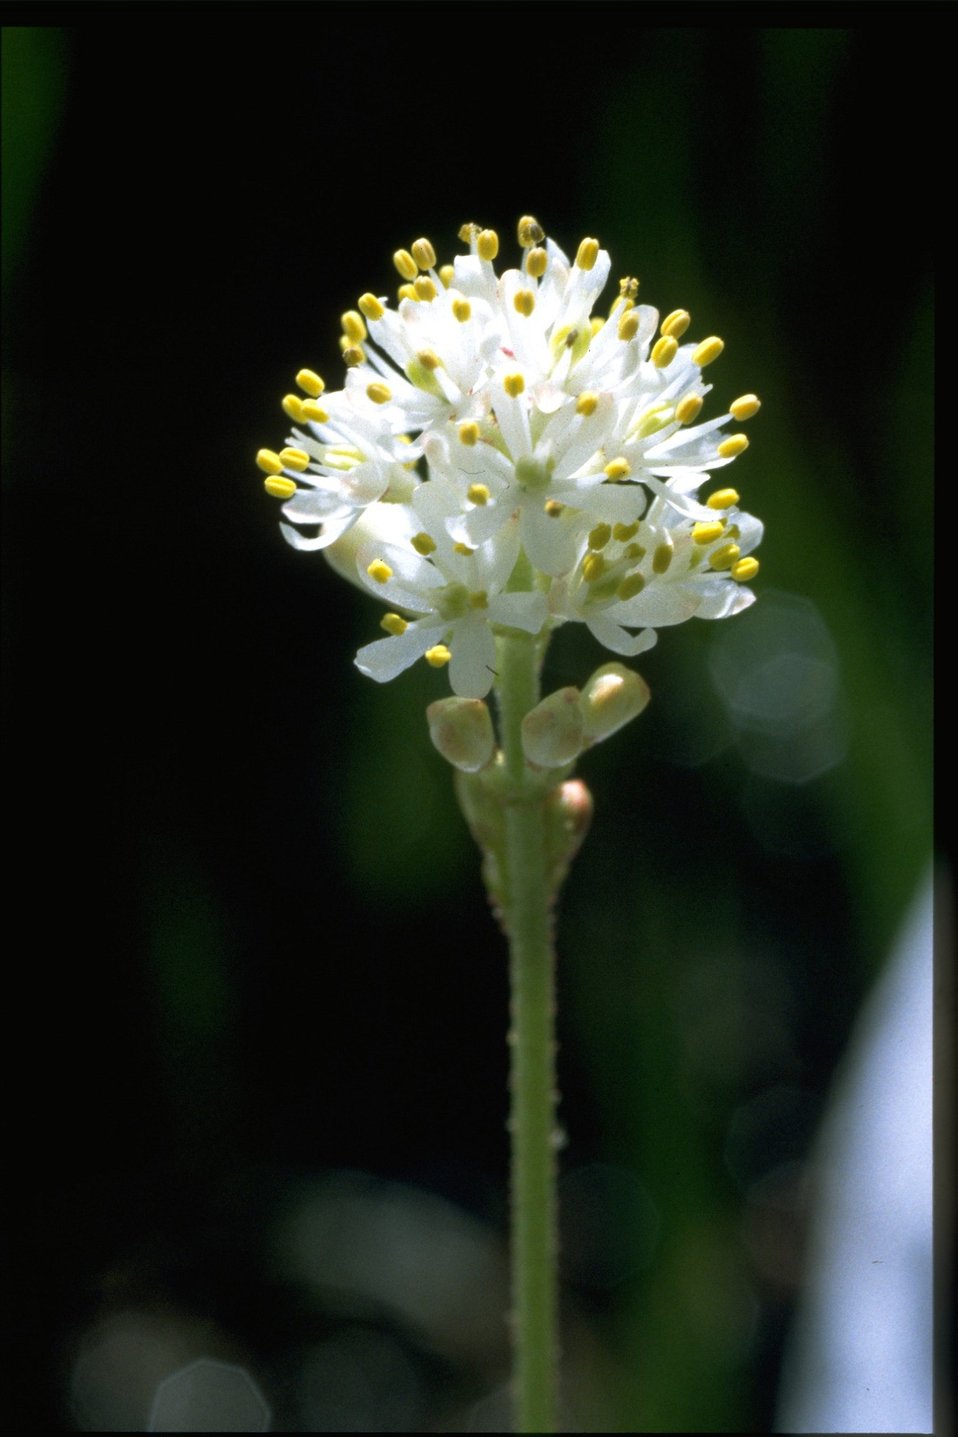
Closeup shot of Tofieldia occidentalis.